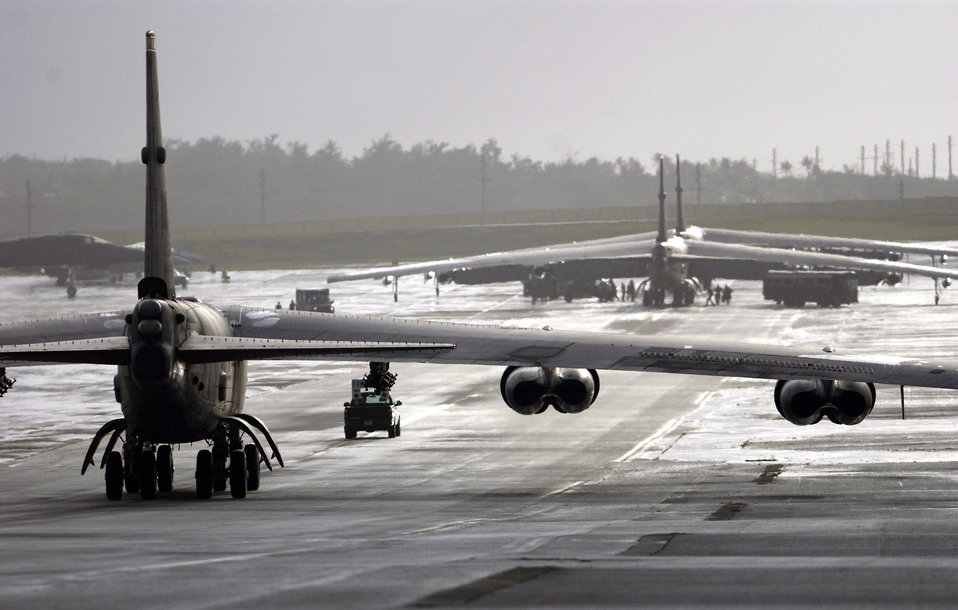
Bombers at Andersen

ANDERSEN AIR FORCE BASE, Guam -- The first of six B-52 Stratofortresses taxis to its parking spot here after landing Feb. 22. The B-52s and about 300 people from Minot Air Force Base, N.D., are deploying here to support U.S. Pacific Command's request for a rotational bomber force on Guam.